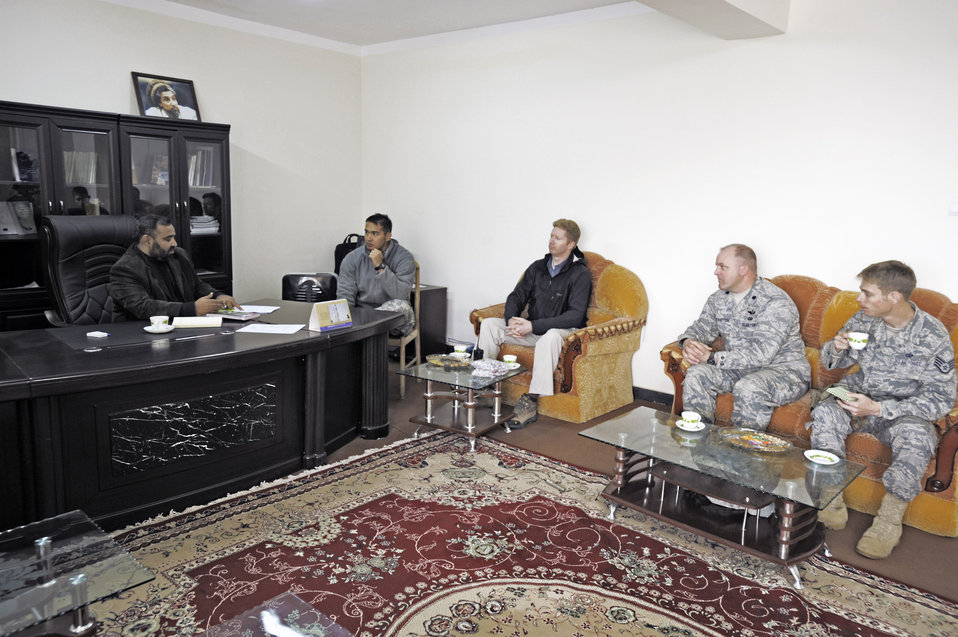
Servicemembers assist Afghans with economic development

U.S. military and civilian agency members of the Panjshir Provincial Reconstruction Team conduct a meeting with the deputy governor Abdul Kabiri to discuss issues pertaining to the province March 3 in Panjshir, Afghanistan.